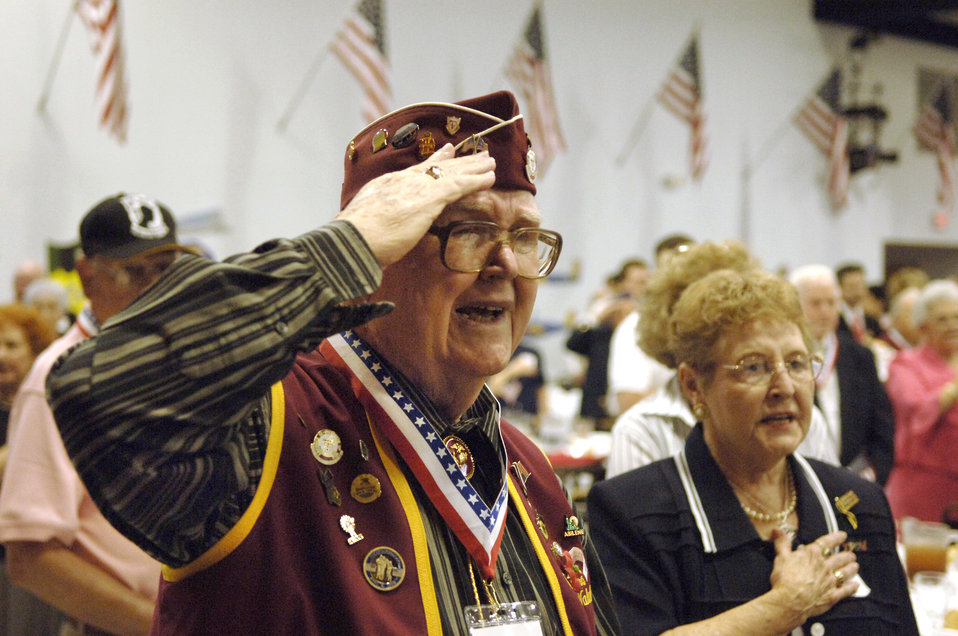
In their honor

Everett Waldrum salutes during the playing of the National Anthem at the 2006 Former POW/Purple Heart Luncheon at Barksdale Air Force Base, La., on Saturday, May 20, 2006. Eighty-two former prisoners of war and 250 Purple Heart recipients attended the luncheon. Lt. Gen. Kevin P. Chilton, 8th Air Force commander, was the keynote speaker. Mr. Waldrum, a former Marine Corps platoon sergeant, was a POW during World War II.